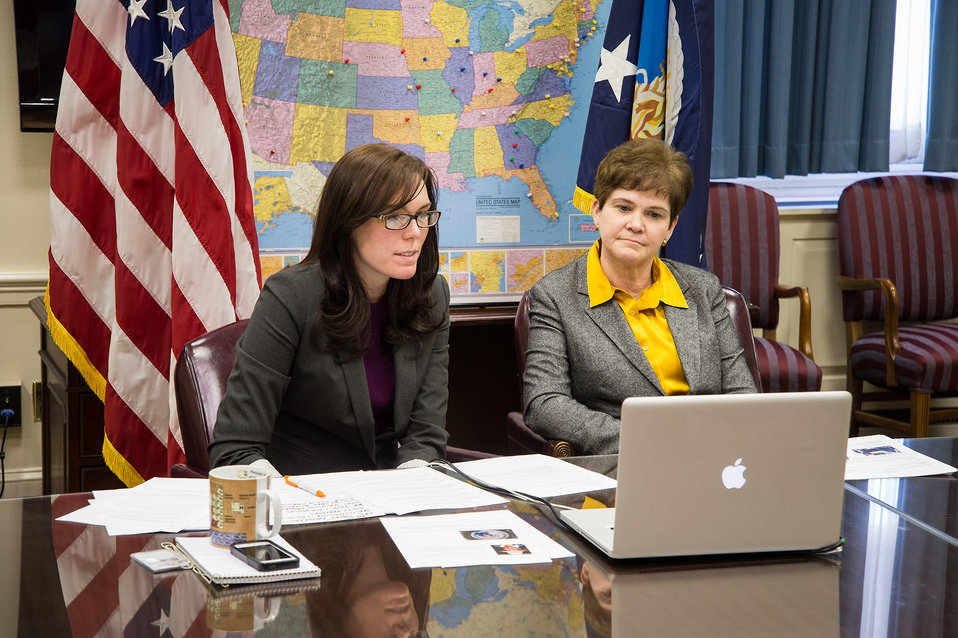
U.S. Department of Agriculture (USDA) Beginning New Farmer and Rancher Program Coordinator Lilia McFarland and Agriculture Deputy Secretary Krysta Harden host a Goggle Hangout on the USDA's commitment to new farmers to build the new generation of agriculture with farmers in Washington, D.C. on Monday, Feb. 24, 2014. Aledo IL corn and soybean farmer Kate Danner and Forest Grove, OR Mujeres farmers Alejandro Tecum, and Adelante participated online in the discussion. USDA Photo Bob Nichols